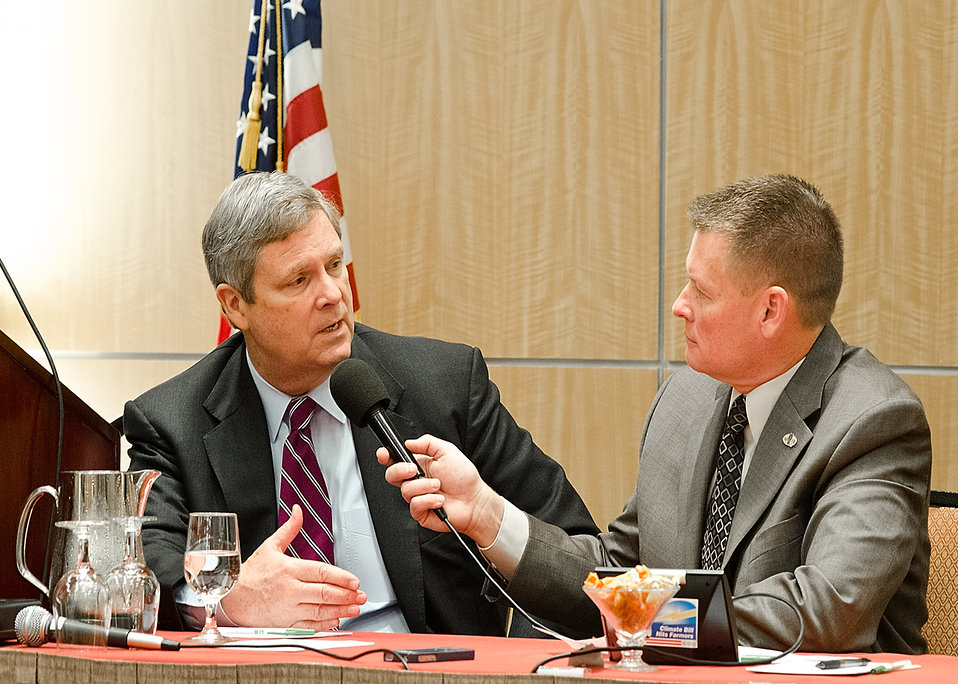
Agriculture Secretary Tom Vilsack (left) interviewed with Agritalk Host Mike Adams (right), during a meeting with the Missouri Farm Bureau in Washington, D.C., on Tuesday, March 20, 2012. Agritalk, The Voice of Rural America is a radio network based in St. Louis, Missouri reaching out to the American Mid-West.